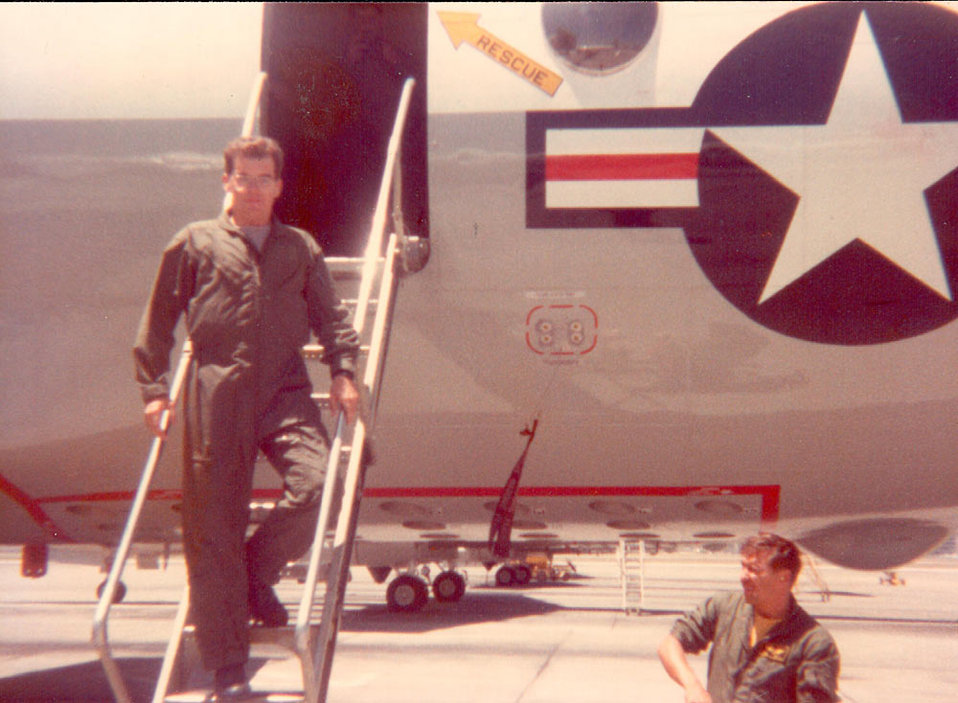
Michael Franz-HQ

Navy veteran Michael Franz now works in the HQ Ecological Services Program for the Branch of Conservation Integration.